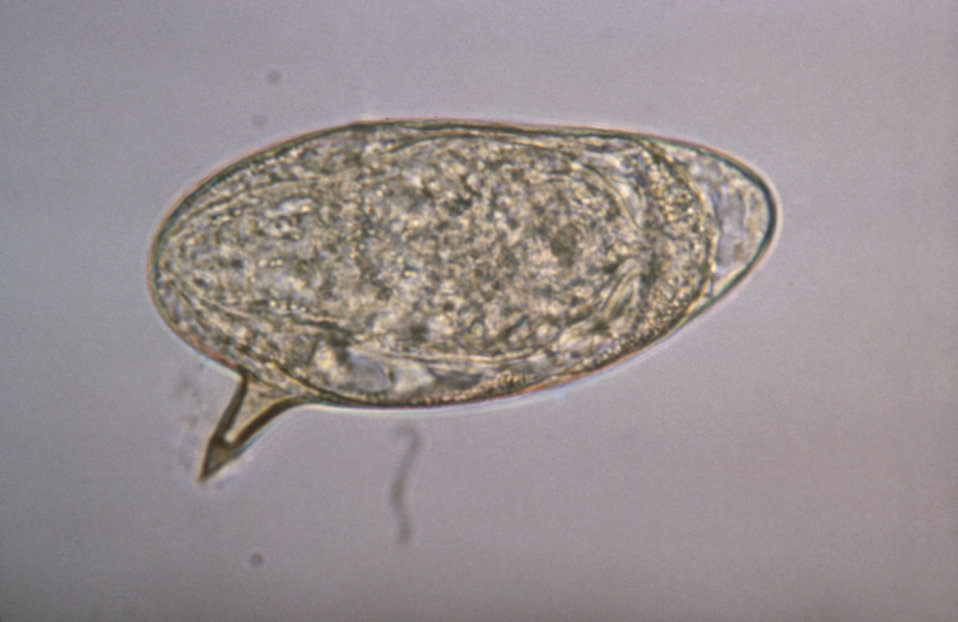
This micrograph depicts an egg from the parasite Schistosoma mansoni, and reveals the egg's characteristic lateral spine.